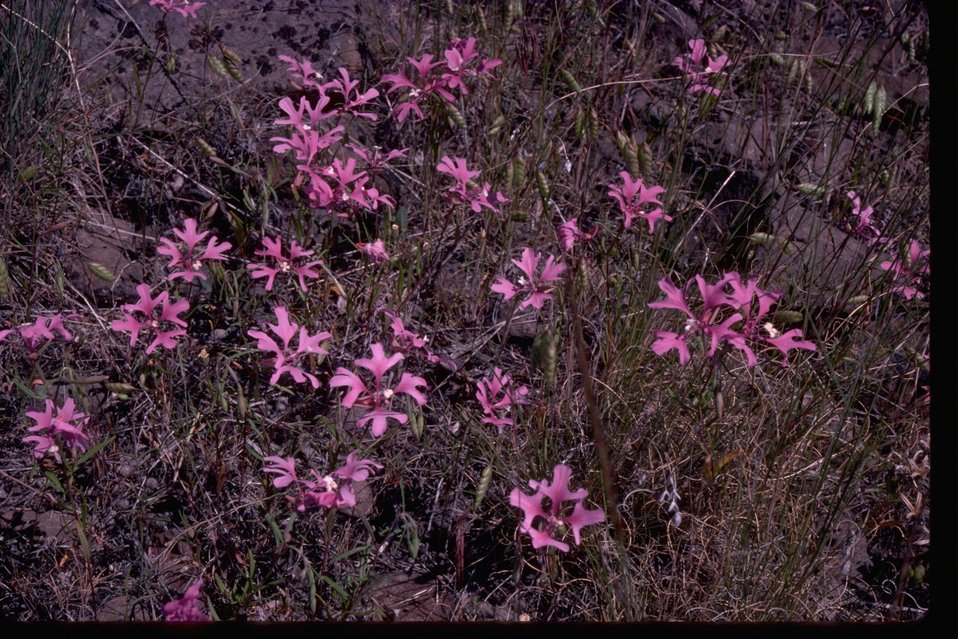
Clarkia Pulchella